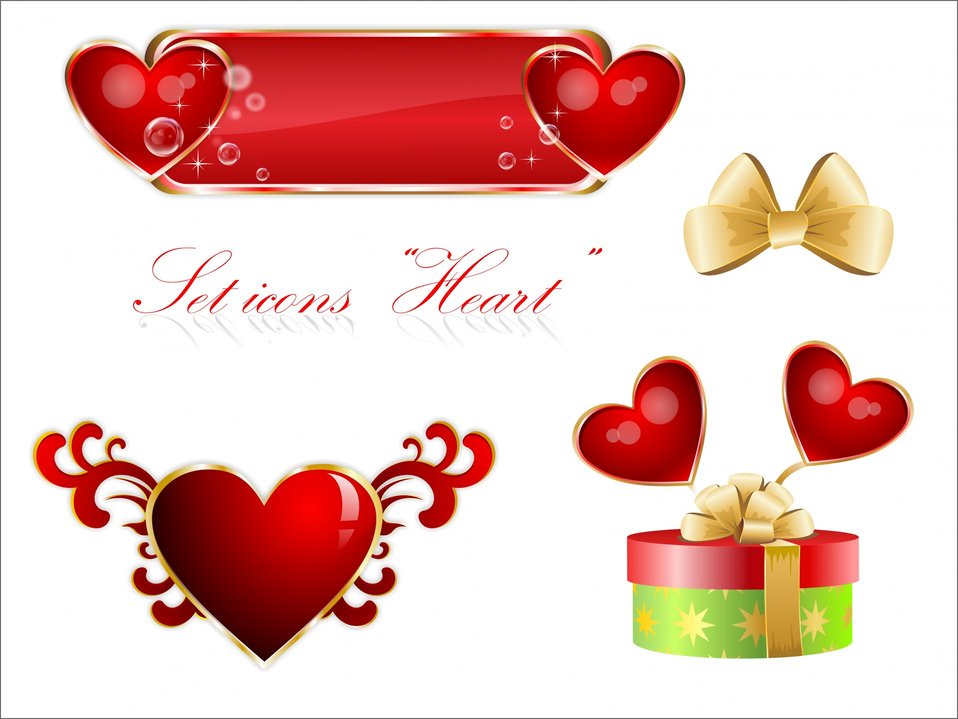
Icons-heart

Set of icons in heart shape.